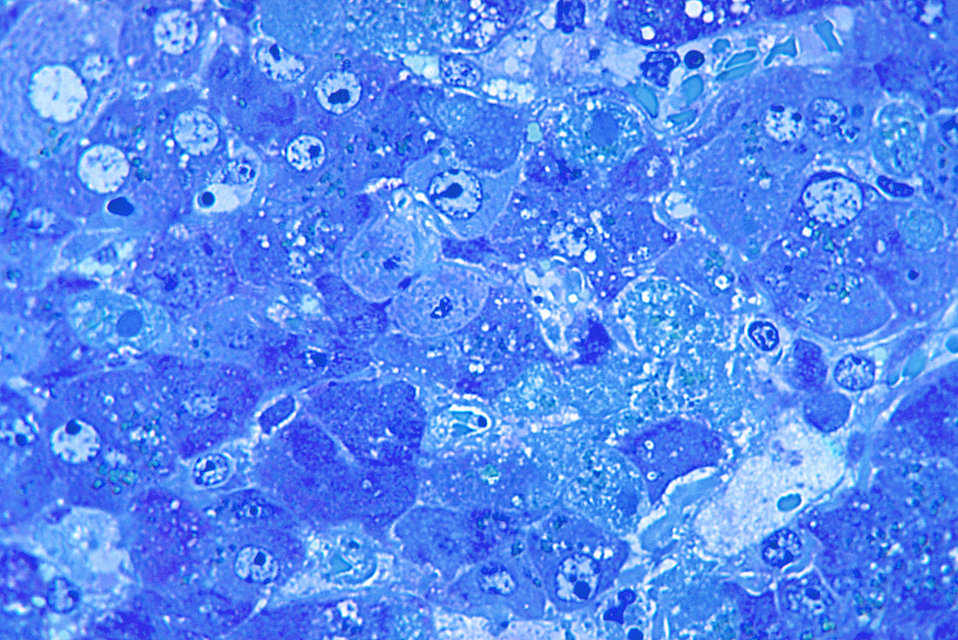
This photomicrograph shows hepatitis caused by the Lassa virus, using toluidine-blue azure II stain.